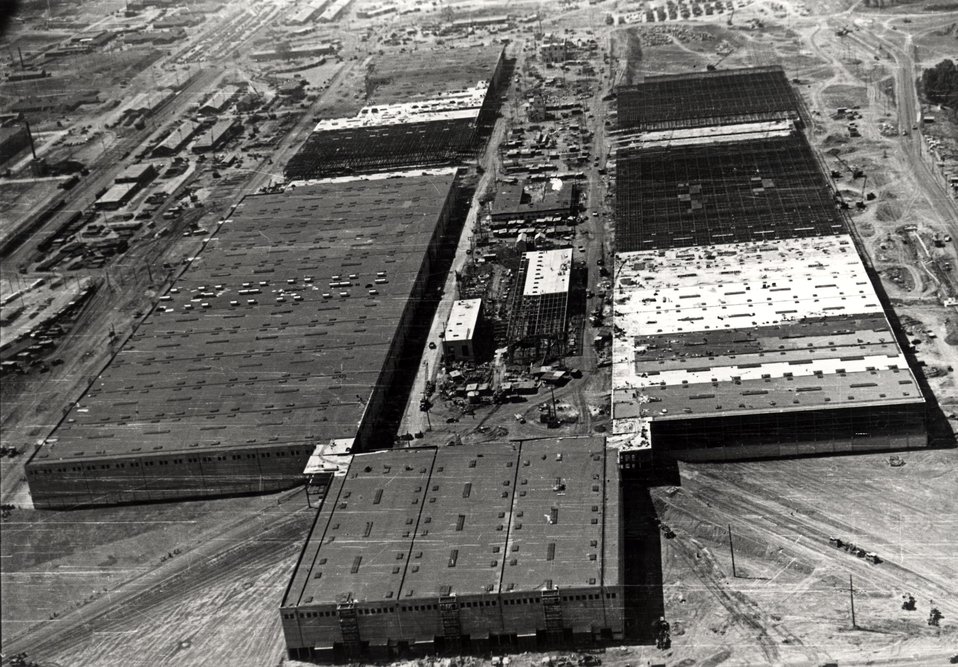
K-25 construction at oak ridge. (June 22, 1944)